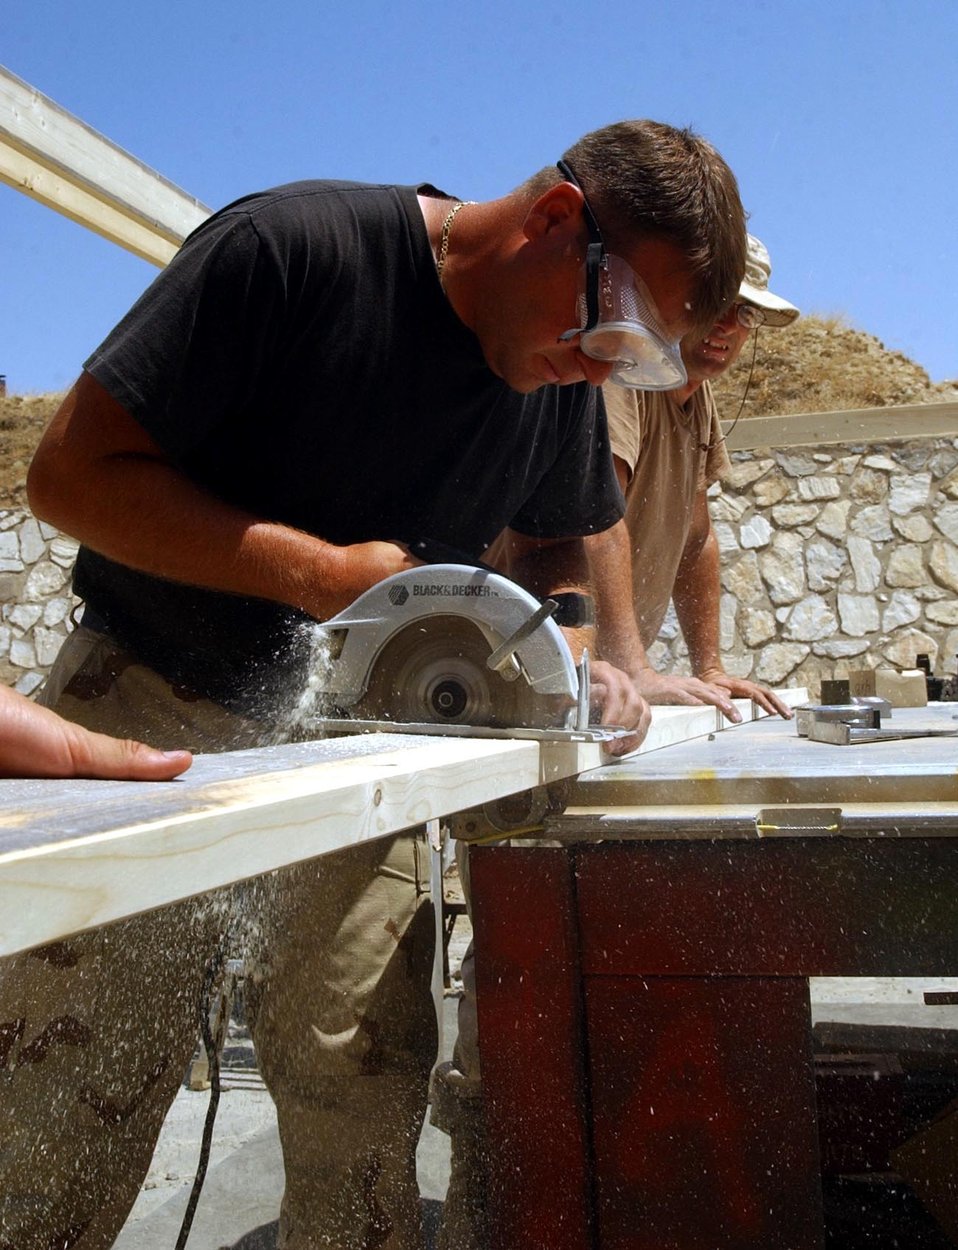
Creating shade

BAGRAM AIR BASE, Afghanistan -- Staff Sgt. Eric Krueger cuts a plank for a shelter to shade the work area here where his team builds munitions. Krueger is munitions troop with the 81st Expeditionary Fighter Squadron's ammunitions flight.